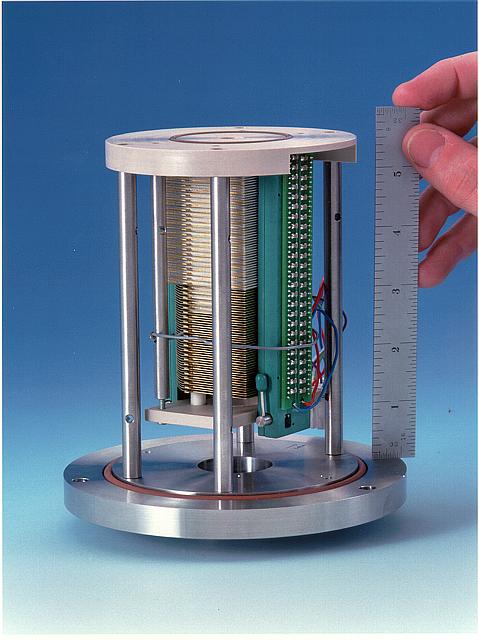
THE ELECTRODYNAMIC ION FUNNEL DEVELOPED AT THE PACIFIC NORTHWEST NATIONAL LABORATORY.

THE FEDERAL LABORATORY CONSORTIUM EXCELLENCE IN TECHNOLOGY TRANSFER AWARD FOR 2004 WAS PRESENTED TO PNNL FOR THE DEVELOPMENT OF THE ELECTRODYNAMIC ION FUNNEL WHICH INCREASES THE SENSITVITY OF ANALYTICAL DEVICES SUCH AS MASS SPECTROMETERS. DOE WON 10 OF THE 25 EXCELLENCE IN TECHNOLOGY TRANSFER AWARDS PRESENTED BY FLC IN 2004.